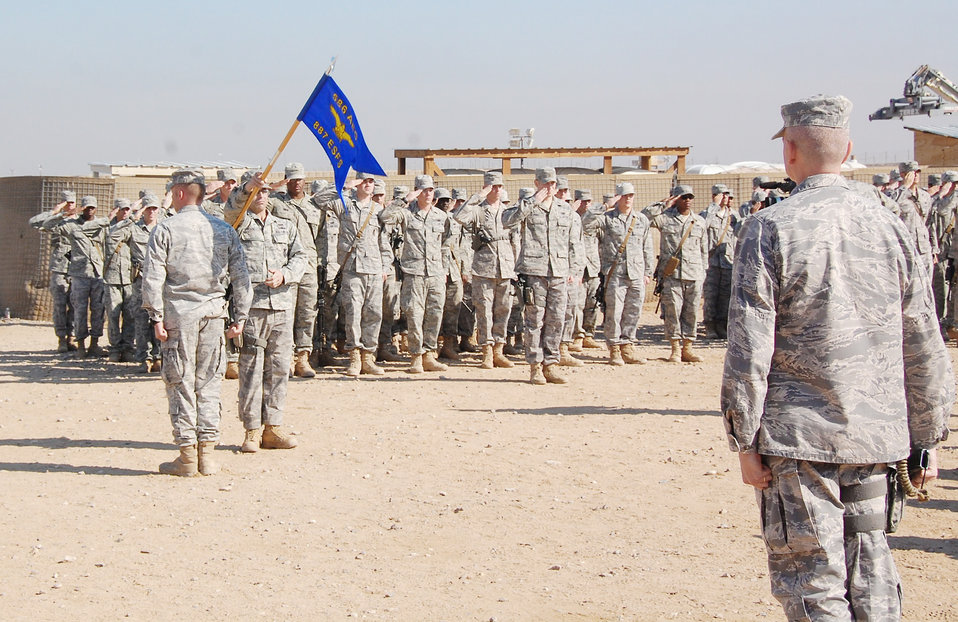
Security forces Airmen end operations at Camp Bucca

Members of the 887th Expeditionary Security Forces Squadron render their final salute to Maj. Larry Wood during the 887th ESFS deactivation ceremony Dec. 3, 2009 at Camp Bucca, Iraq. Major Wood is the 887th ESFS commander.